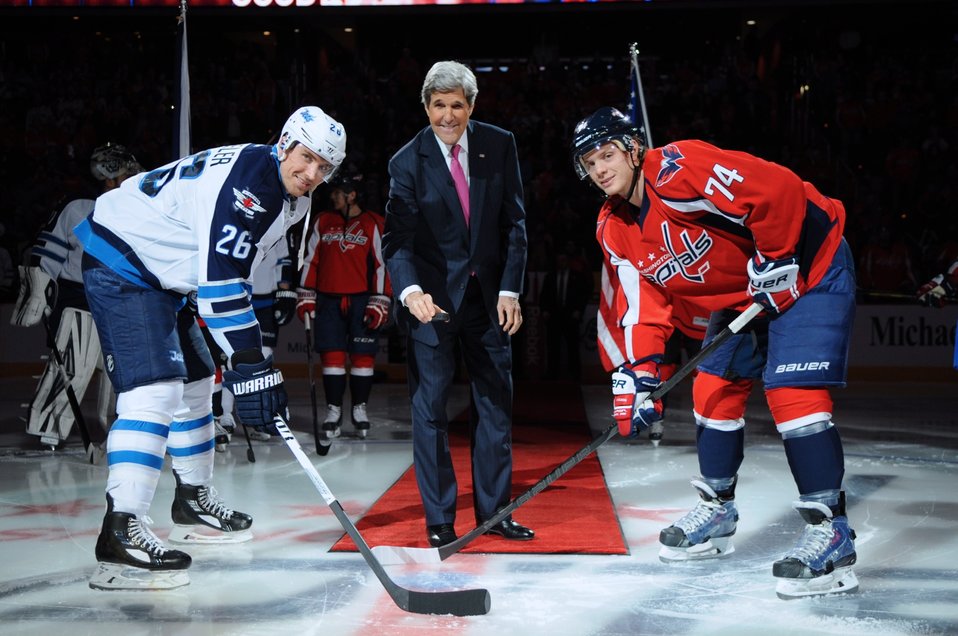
Secretary Kerry Prepares for Ceremonial Puck Drop With U.S. Olympians Wheeler, Carlson

U.S. Secretary of State John Kerry prepares for a ceremonial puck drop with Winnipeg Jets player Blake Wheeler and Washington Capitals player John Carlson -- both members of Team USA -- after honoring Olympics-bound hockey players before the Washington Capitals-Winnipeg Jets game at the Verizon Center in Washington, D.C., on February 6, 2014.